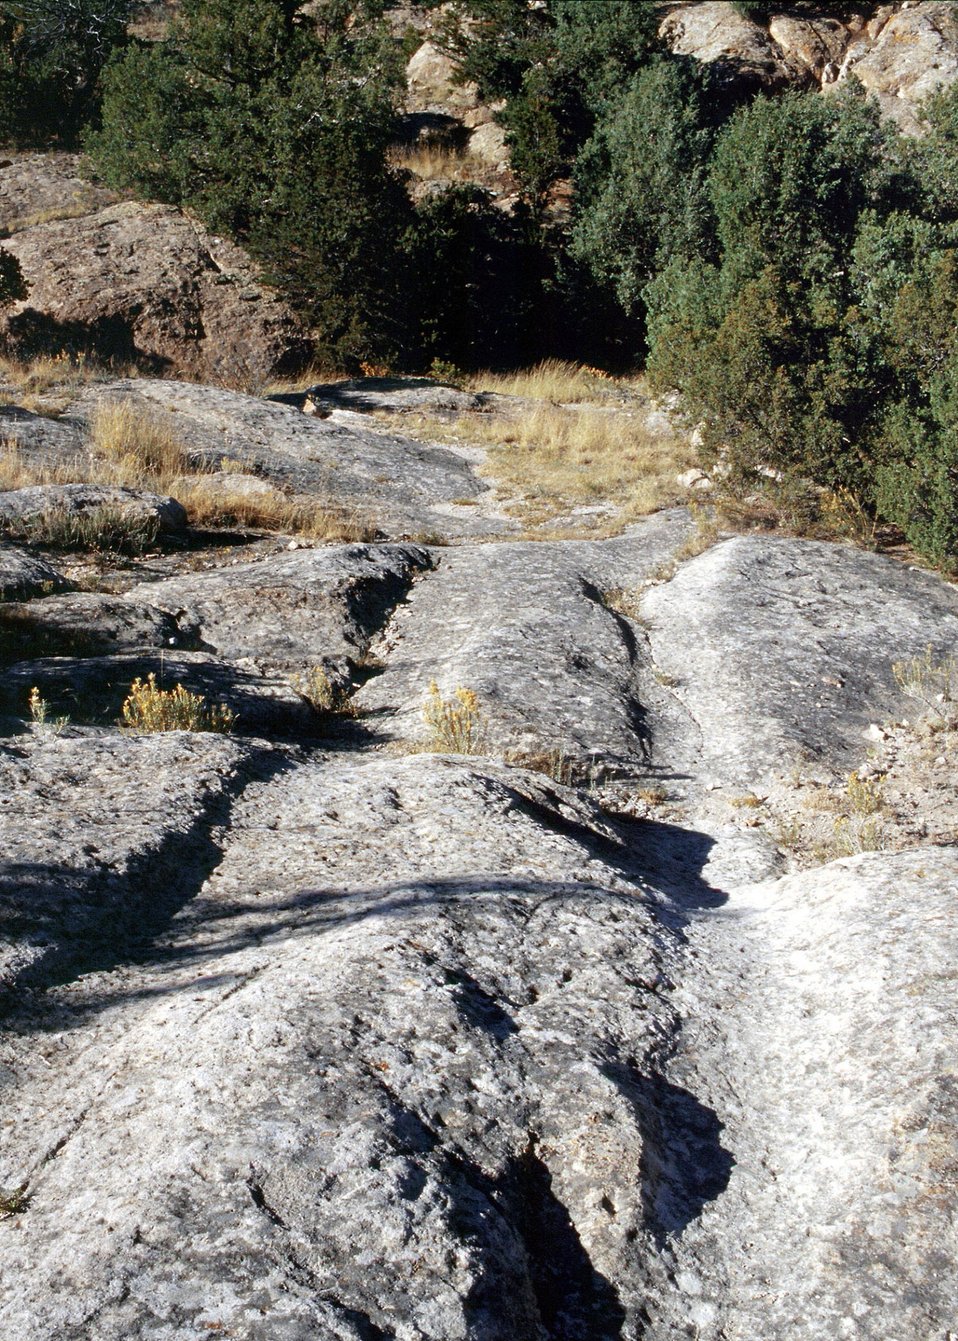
Wagon Ruts